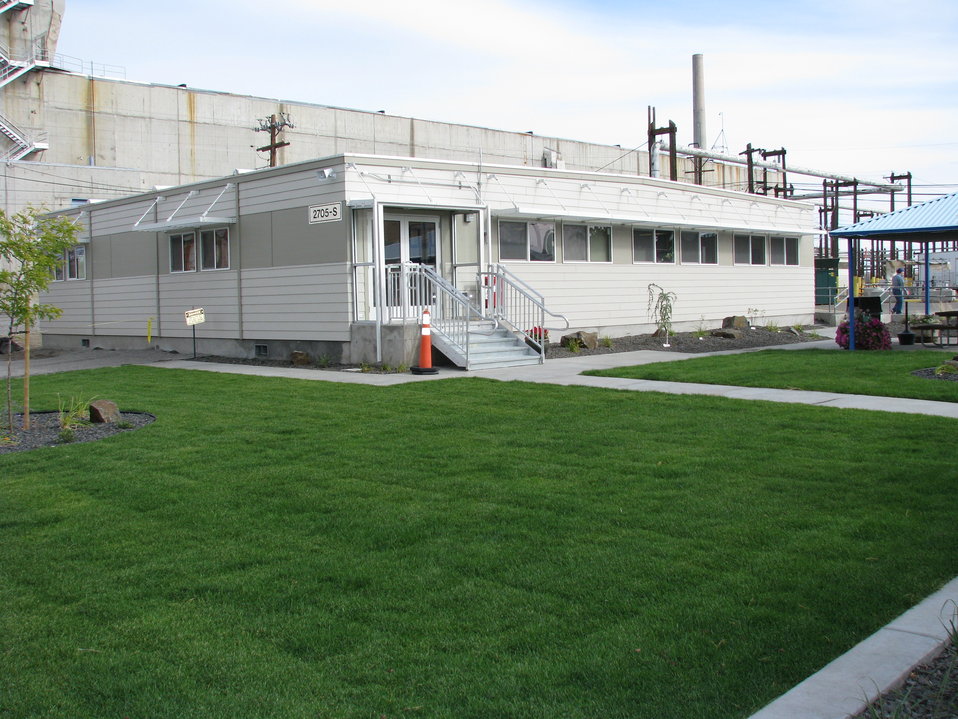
Office of River Protection contractor earns DOE award for Recovery Act-funded facility upgrades

Washington River Protection Solutions (WRPS), the Hanford tank farms contractor, is the recipient of an Environmental Star, or E-Star, award from the U.S. Department of Energy (DOE) for recent upgrades made at the 222-S Laboratory.

WRPS received the award for completing more than $15 million in Recovery Act-funded projects at the lab in fiscal year 2010. Those upgrades include construction of additional office space, a large administration building, a climate-controlled storage facility and a brand new roof. In all cases, 'green thinking' was part of the design and construction process to make sure the overall impact on the environment is minimal.